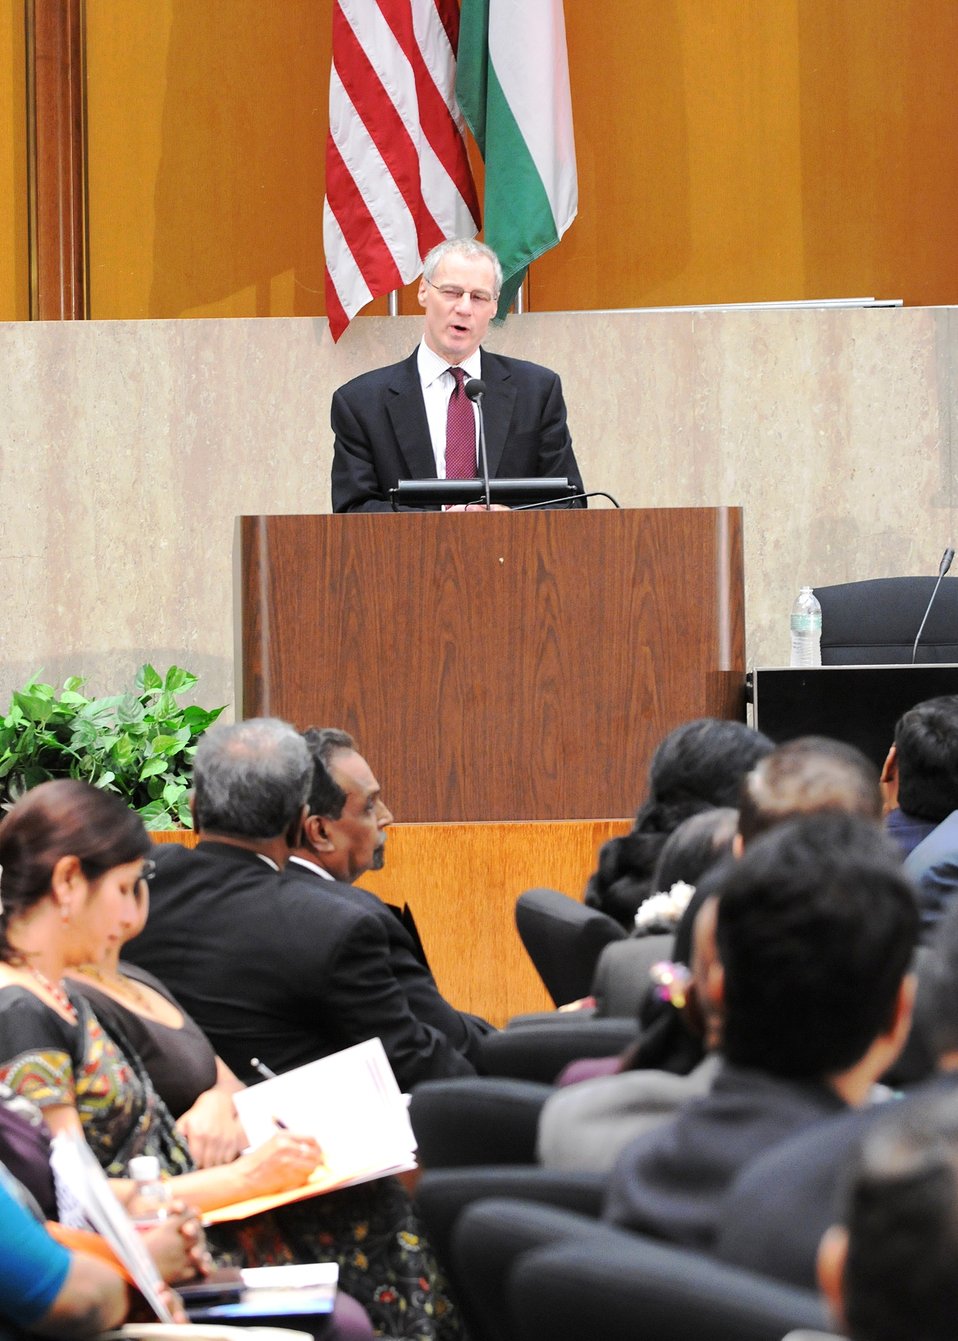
U.S.-India Business Council President Somers Delivers Welcoming Remarks

Ron Somers, President of U.S.-India Business Council (USIBC) delivering welcome remarks at the US-India People to People Conference held at the U.S. Department of State in Washington, D.C., on October 28, 2010.